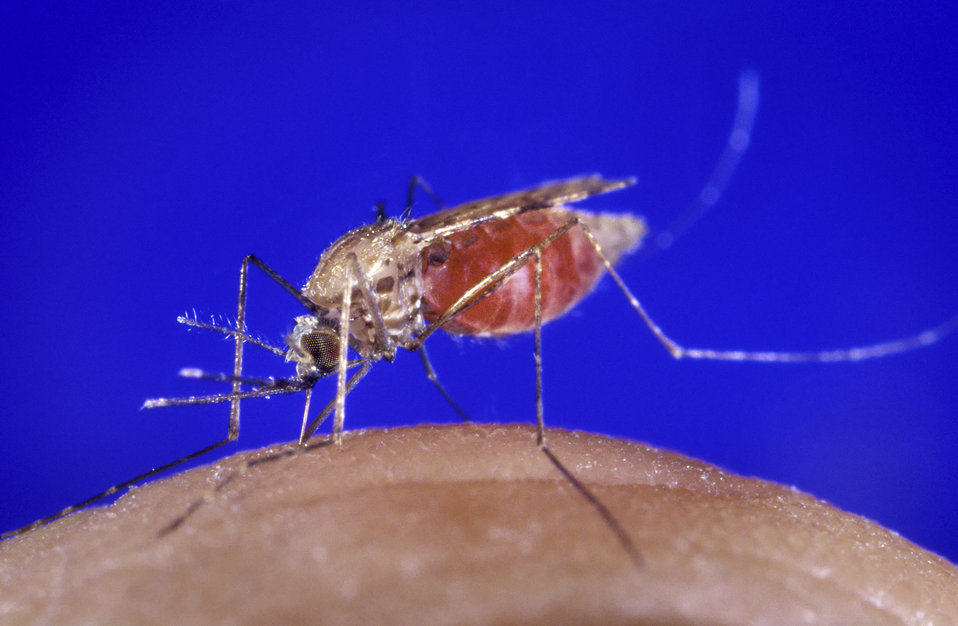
Anopheles gambiae.